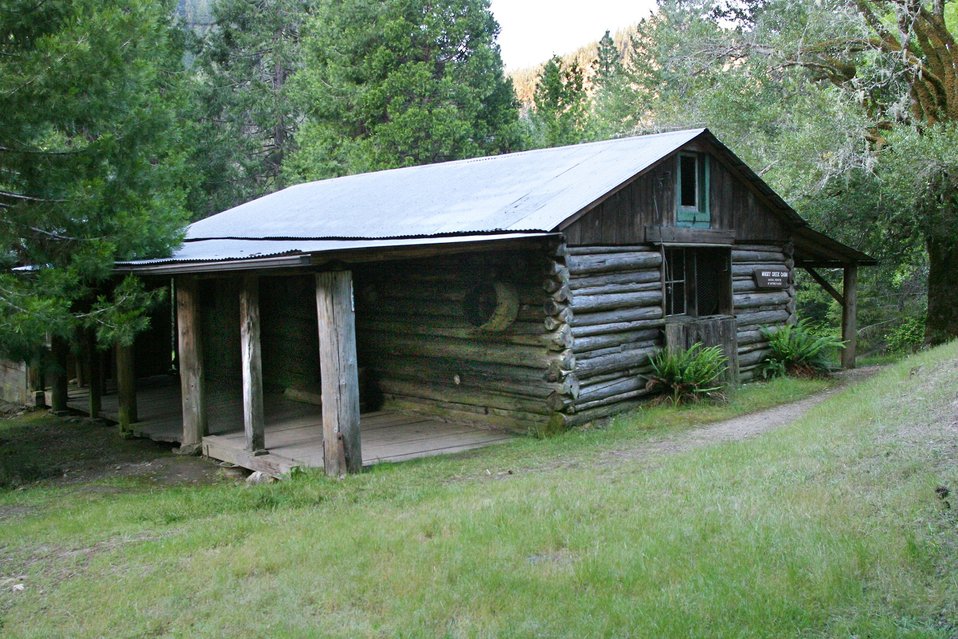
Whisky Creek Cabin along the Wild section of the Rogue River from Grave Creek to Foster Bar. 3100 cfs at Grants Pass and 5300 at Agness.